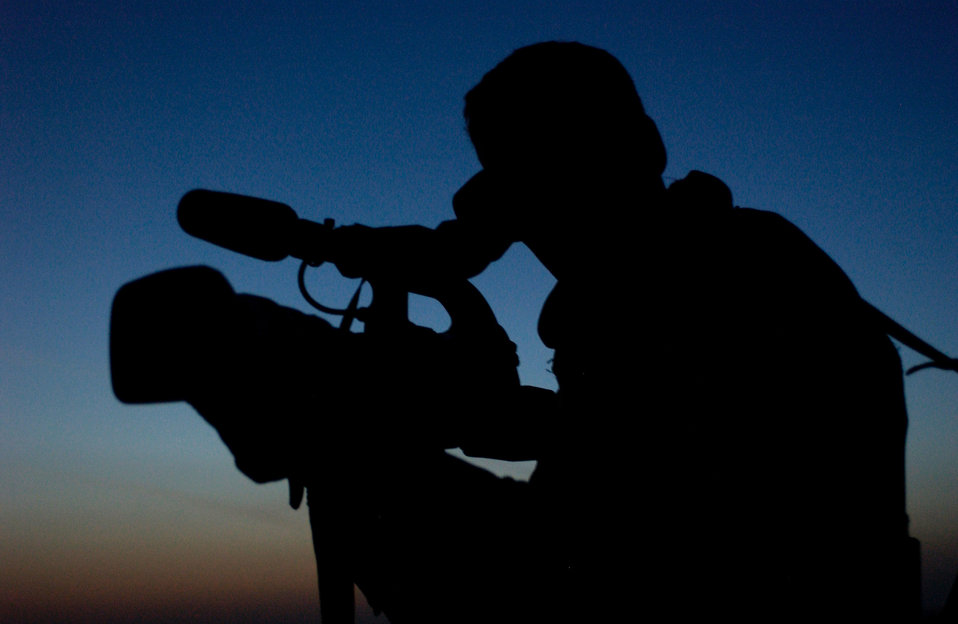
Cameraman

OPERATION IRAQI FREEDOM -- Staff Sgt. Mark Kenyon, a videographer with the 1st Combat Camera Squadron, documents incoming aircraft April 2 at a forward-deployed location in southern Iraq.